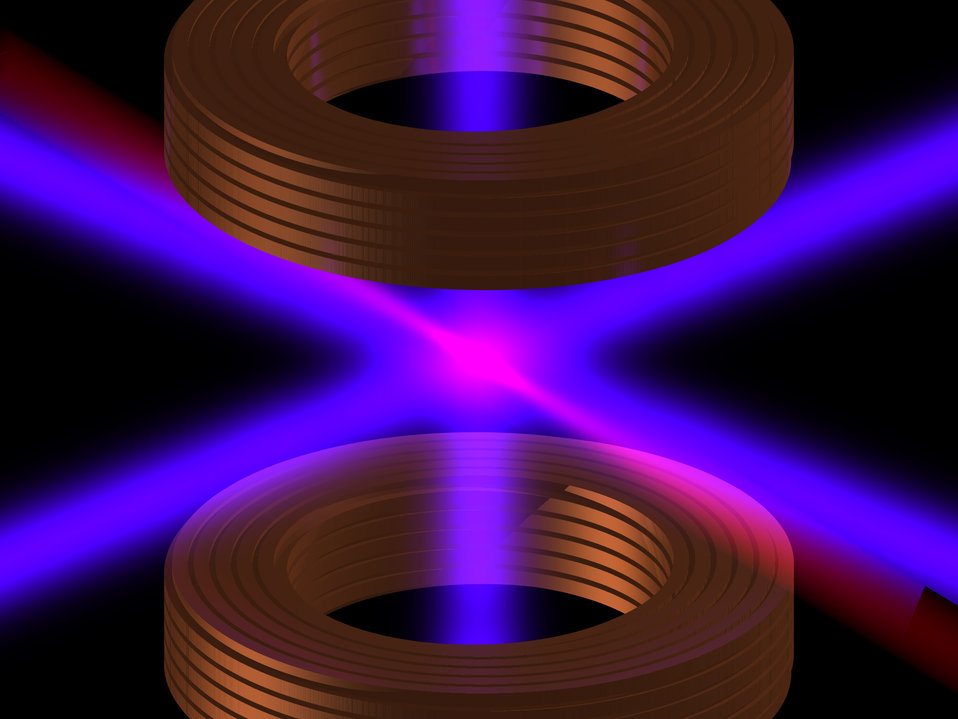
Optical atomic clock

NIST's new optical atomic clock uses two magnetic coils (red rings) and an optical lattice (red laser beam), as well as intersecting violet lasers to cool ytterbium atoms, slowing their motion.